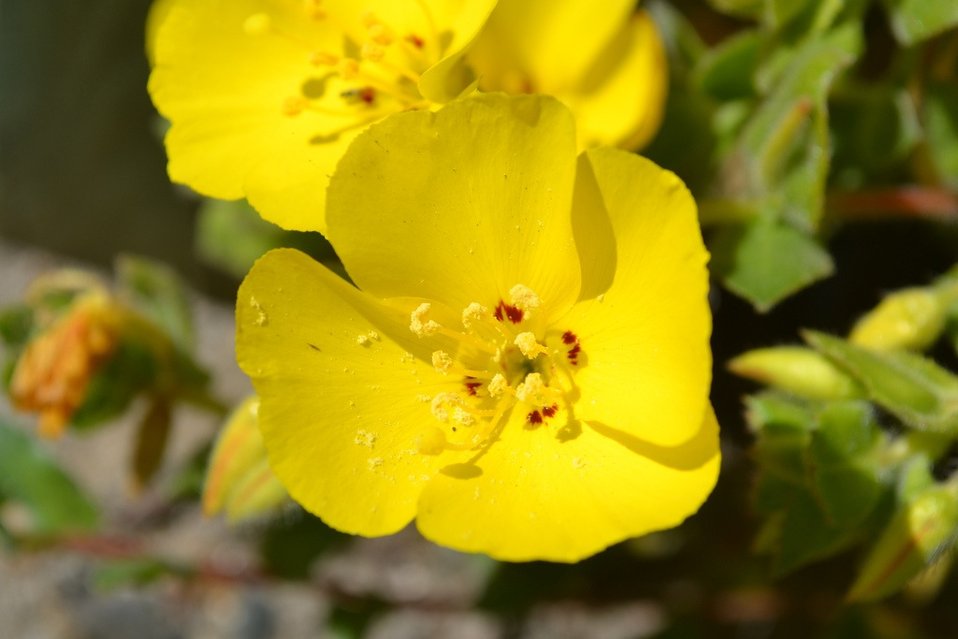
beach evening primrose

Tijuana Slough National Wildlife Refuge, CA